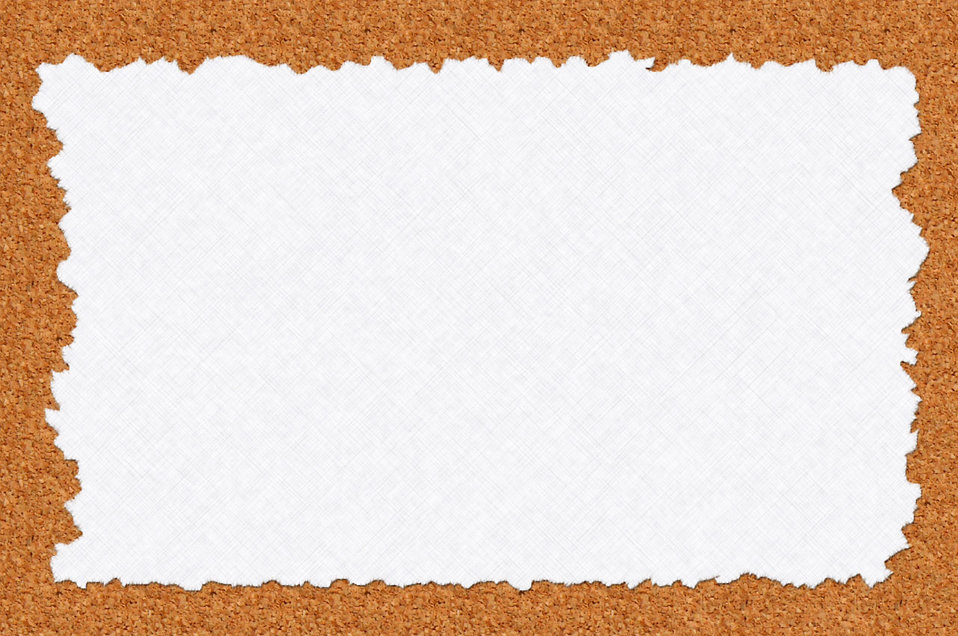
Note on board

A torn paper note on cork board.